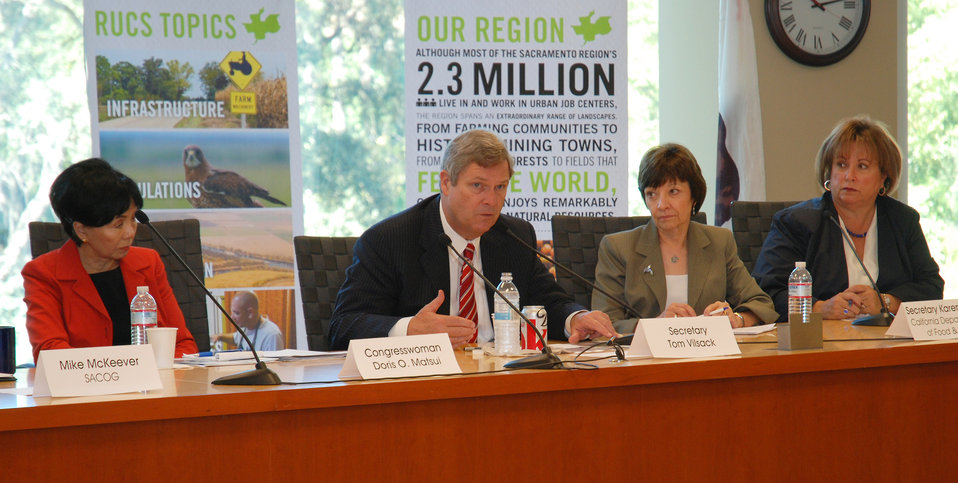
Agriculture Secretary Tom Vilsack attending the White House Business Council Breakfast Meeting in Sacramento, CA, on September 26, 2011. Also attending was Congresswoman Doris Matsui (at left of the Sec.) and Secretary Karen Ross, CA Department of Food & Agriculture (at right of the Sec.).